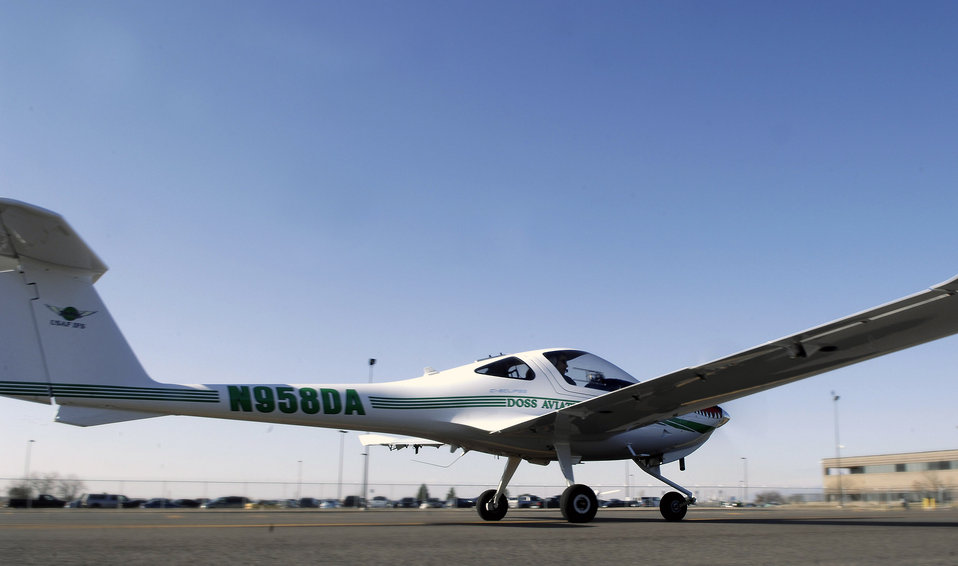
Making a pilot

A student pilot taxis a DA-20 aircraft on the Doss Aviation flightline during an Initial Flight Screening Course April 7 in Pueblo, Colo. The purpose of the course is to screen aviation candidates and prepare them for the more rigorous flight school programs that will place them behind the most powerful, technologically advanced airplanes in the world.